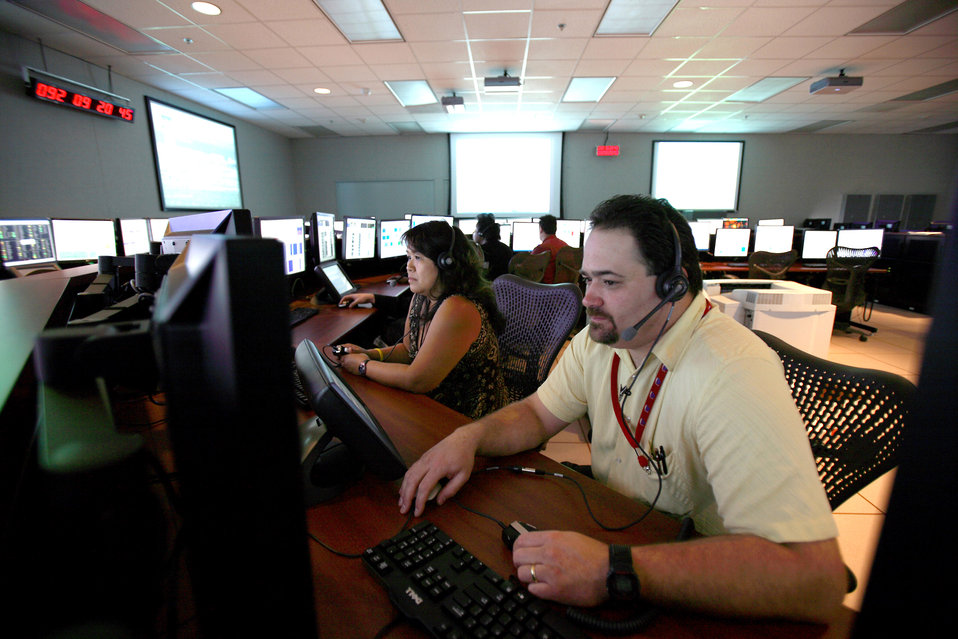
New mission control room ready for F-35 flight tests

Thomas Caputo, 412th Test Wing security administrator, and Cathy De Lima, 412th Range Squadron range control officer, perform computer diagnostics April 2 at the new F-35 Integrated Test Force control room at Edwards Air Force Base, Calif. The control room will enable test force people to better monitor the real-time performance of the F-35 Joint Strike Fighter during its test missions.